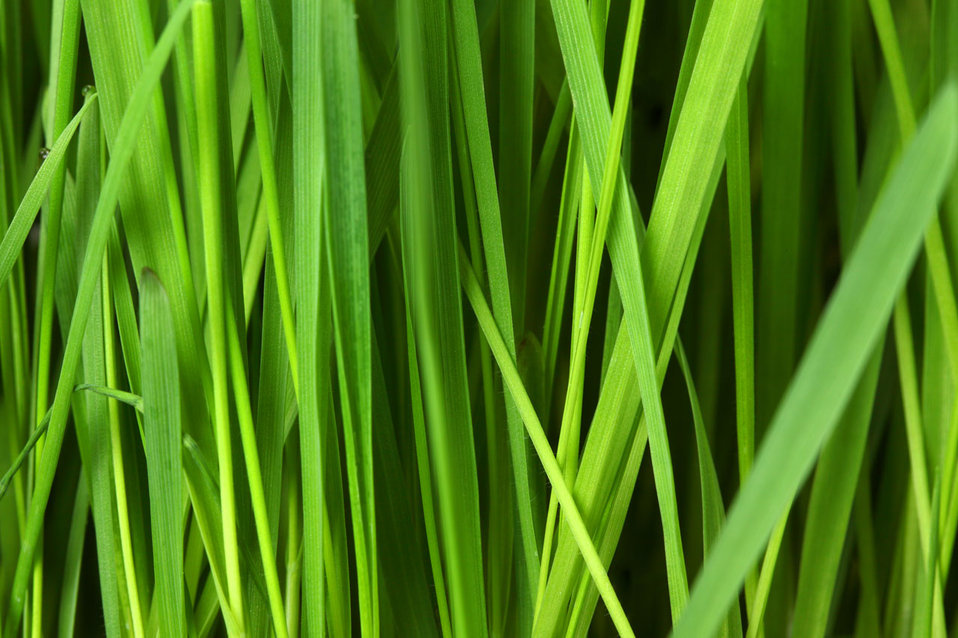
Grass background

Fresh green grass background macro image.